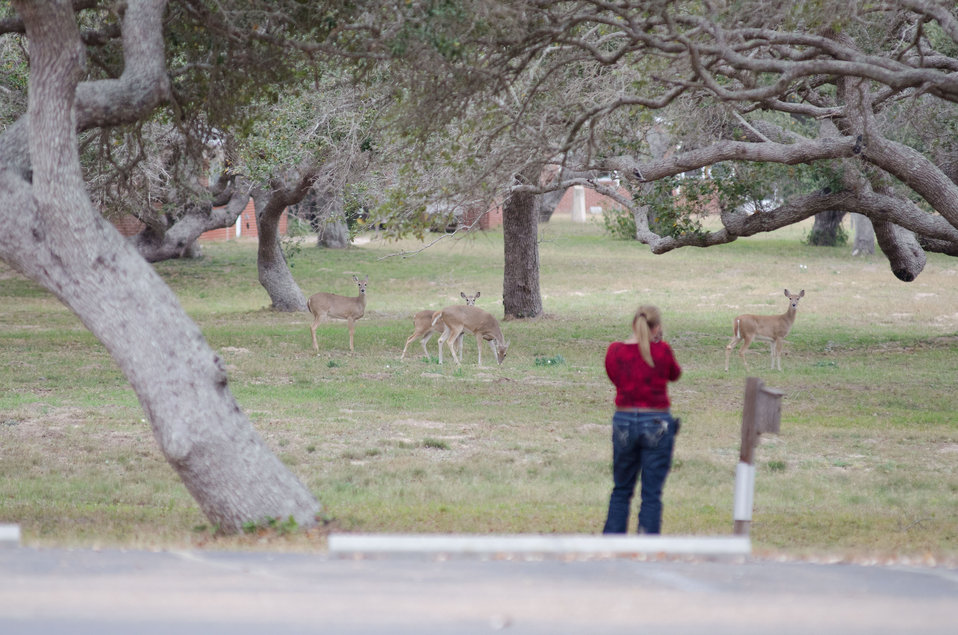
U.S. Department of Agriculture (USDA) Natural Resources Conservation Service (NRCS) Photographer Beverly Moseley photographs wild deer from the visitor center parking lot at the Aransas National Wildlife Refuge, in Austwell, Texas, on Friday, December 16, 2011. State Conservationist Salvador Salinas commented on the USDA-NRCS Gulf of Mexico Initiative (GoMI) during a press conference, about improving water quality, habitat, and the health of the Gulf ecosystem. “Launching this initiative is a top priority for NRCS in Texas because the Gulf of Mexico is one of our state’s premier natural resources. It provides vital habitat for wildlife, and creates jobs in industries that depend upon them. The health of this resource is essential to Texas as well as to the nation,” said Salvador Salinas. The Texas initiative focuses on three watersheds in Refugio, Calhoun, Victoria and Aransas counties and ultimately the Gulf of Mexico.
“What is really compelling about GoMI and other similar conservation efforts is that they prove that Texas farmers and ranchers not only feed and clothe us and power our vehicles, but they can also help protect and restore our rivers and provide more habitat for wildlife,” stated Salinas. “That’s why it is important that this conservation project is not about taking productive farm land out of production. This is a working lands initiative, so that not only are we helping to restore the health of the Gulf, but we’re also helping to sustain and enhance the productivity of the Gulf’s farms and ranches.”
Nationally, USDA-NRCS is dedicating up to $50 million over three years to this effort.
NRCS will continue to provide proven technical expertise and that of their partners. The anticipated result is improved water quality, stream flows and wildlife habitat.